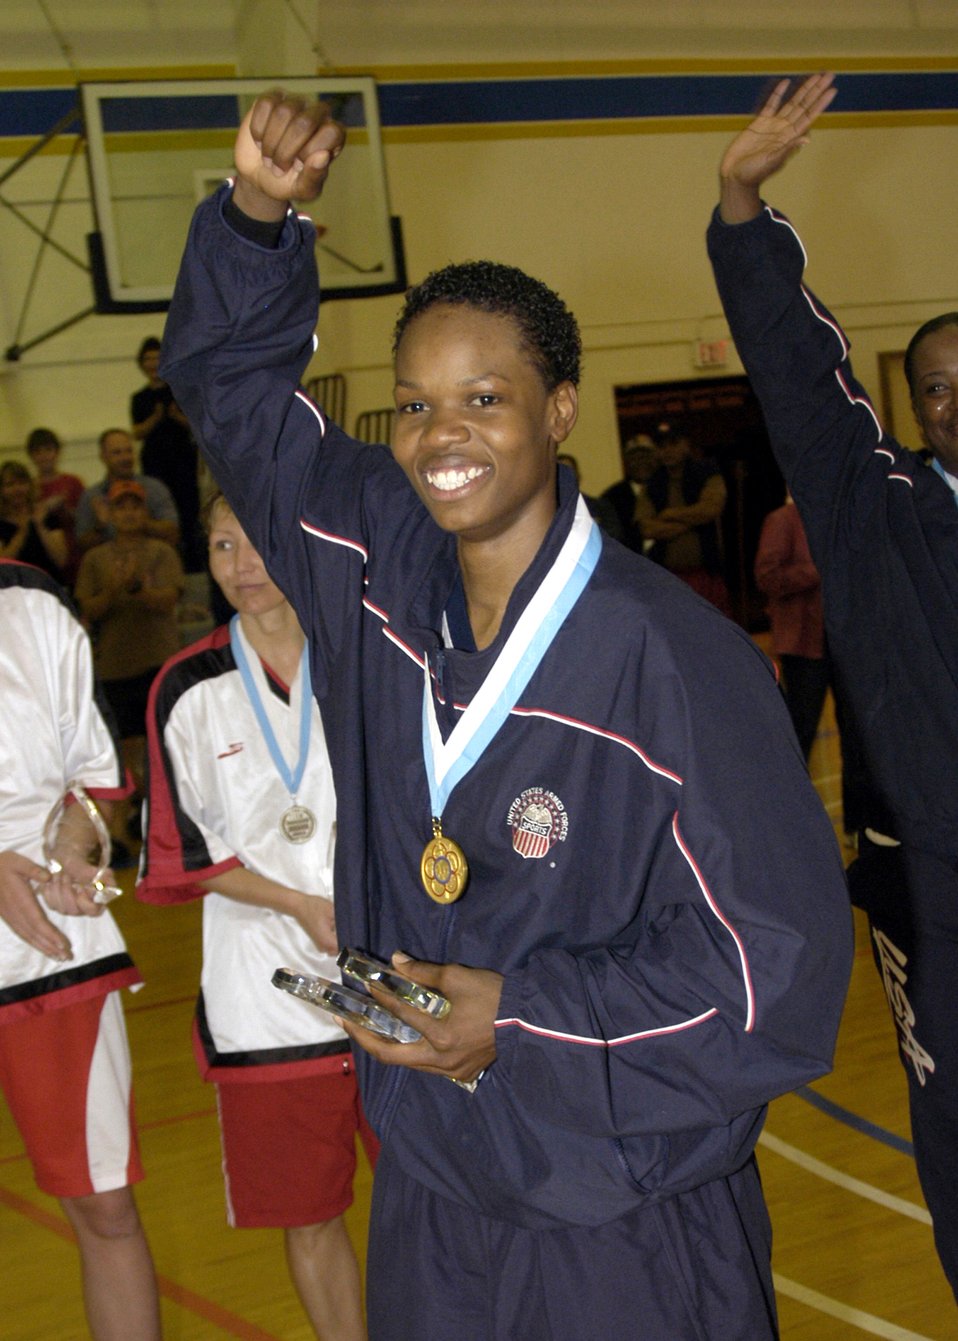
Iceman hoopster to tour with pros

NAVAL BASE VENTURA COUNTY, Calif. -- Airman 1st Class Naomi Mobley, 6-foot-3-inch power forward for the U.S. Armed Forces Women's Basketball Team, receives a gold medal after the Conseil International du Sport Militaire World Women's Basketball Championship here. Airman Mobley is a vehicle operator in the 354th Logistics Readiness Squadron at Eielson Air Force Base, Alaska.